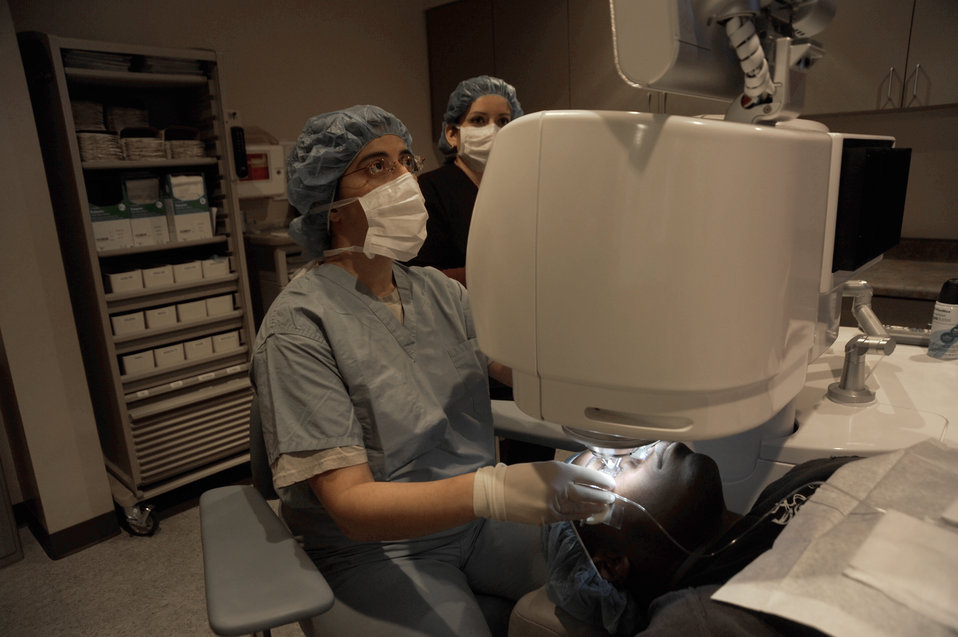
WHMC LASIK

Maj. (Dr.) Vashuda Panday uses a laser to cut a flap in the cornea of Army Staff Sgt. Stanley Arnold as a step in his LASIK refractive surgery March 3, 2011, at Lackland Air Force Base, Texas. Dr. Panday is the chief of cornea refractive surgery at the Joint Refractive Surgery Center and Sergeant Arnold is an instructor and infantryman at Ft. Huachuca, Ariz.